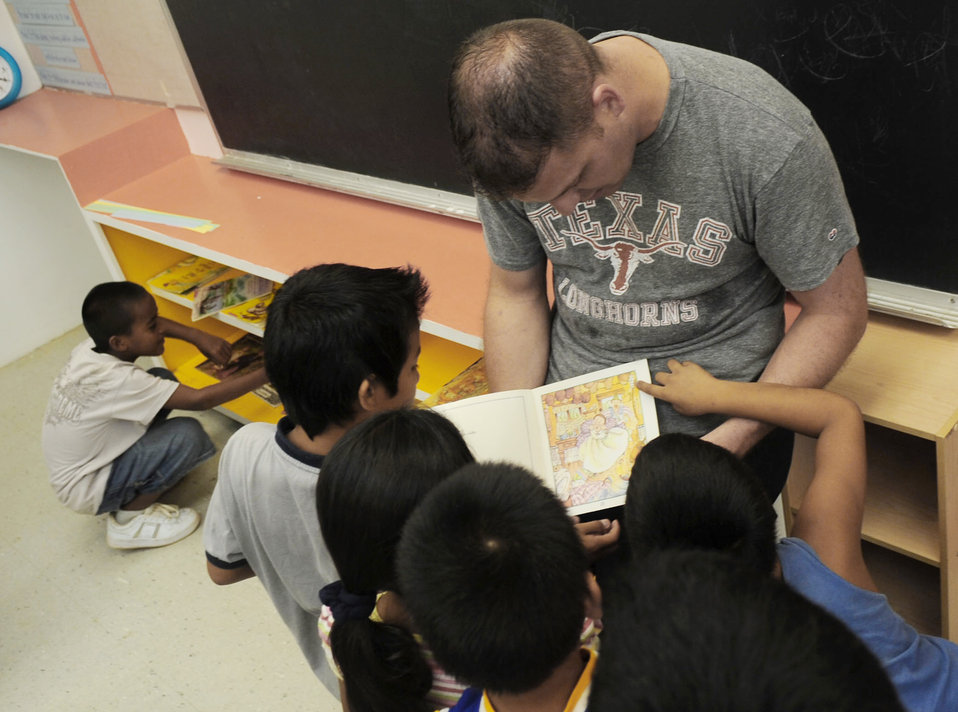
Airmen spend time with students during deployment

Staff Sgt. Frank Ruckel reads to some of the third and fourth graders June 19 at Machananao Elementary School in Agana, Guam. The Dripping Springs, Texas, native is deployed to Andersen Air Force Base, Guam, from Elmendorf AFB, Alaska, to support U.S. Pacific Command's continuous bomber presence in the Asia-Pacific Region. Sergeant Ruckel is a 3rd Expeditionary Maintenance Unit aircraft metals technologist.